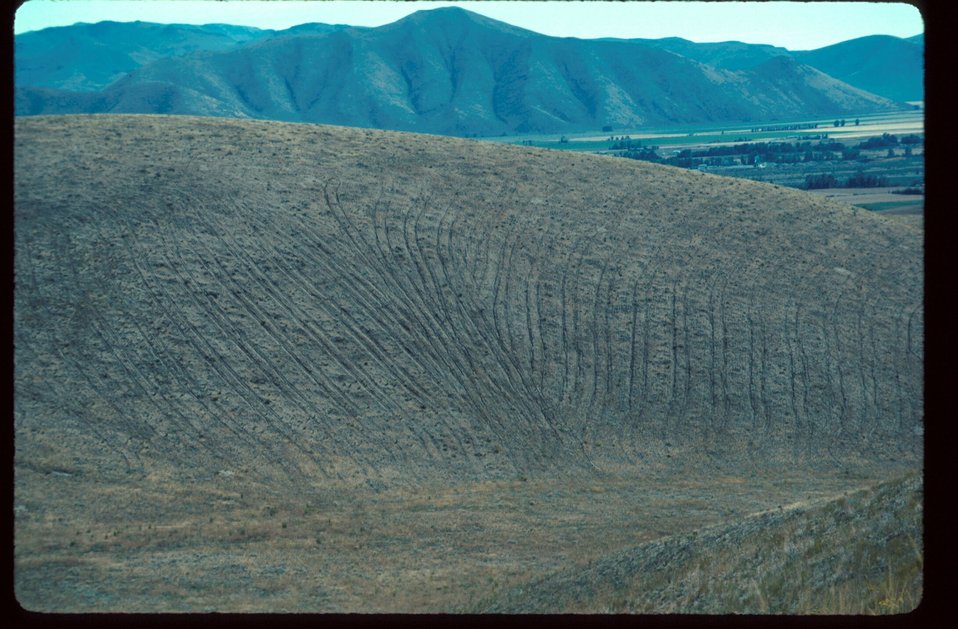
Range Restoration Project